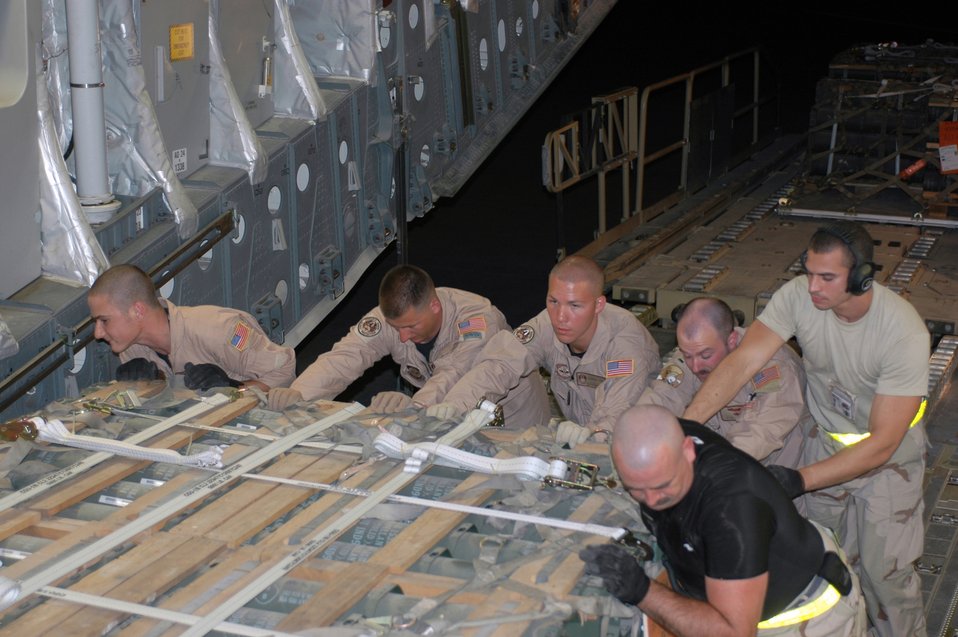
Airmen deliver strategic aid to Lebanese military

Staff Sergeants Greg Rada and John Quick, Senior Airman Dale Adkins and 1st Lt. Alex Hanna joined with two forward-deployed Airmen to upload about 180 pallets of ammunition for delivery to Rafic Harari International Airport in Beirut, Lebanon May 26. The C-17 Globemaster III is capable of rapid delivery of troops and cargo to any location worldwide. Sergeant Rada is a 816th Expeditionary Airlift Squadron loadmaster. Sergeant Quick and Airman Adkins are 436th Security Forces Squadron Ravens. Lieutenant Hanna is an 816 EAMS copilot.